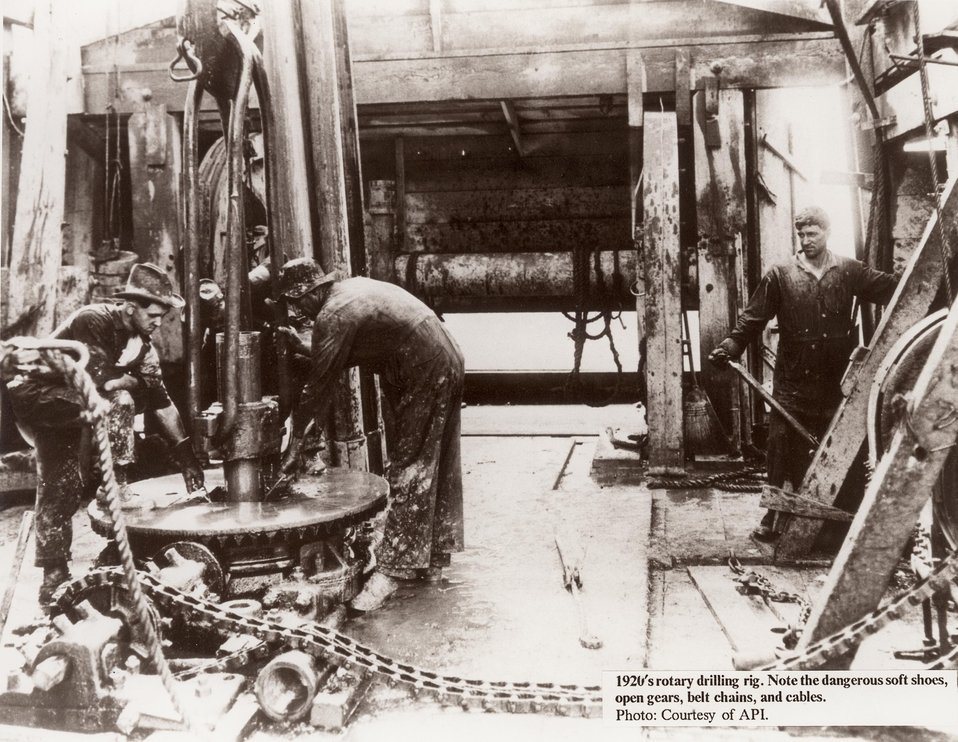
1920's rotary drilling rig.